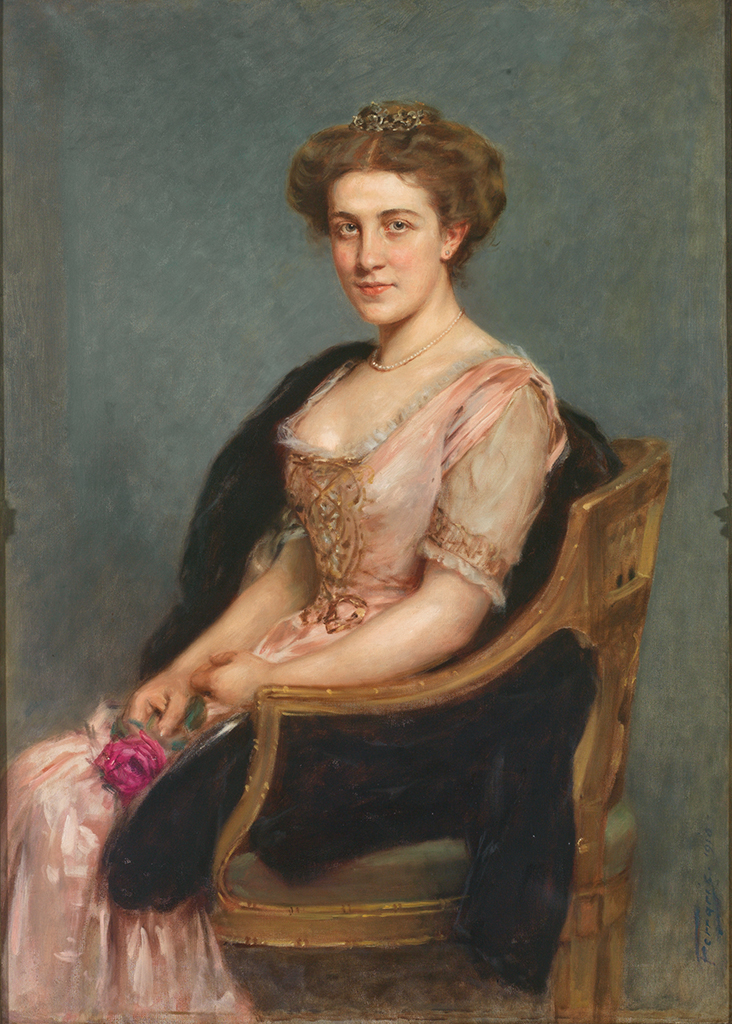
Arthur von Ferraris Portrait einer Dame 1910